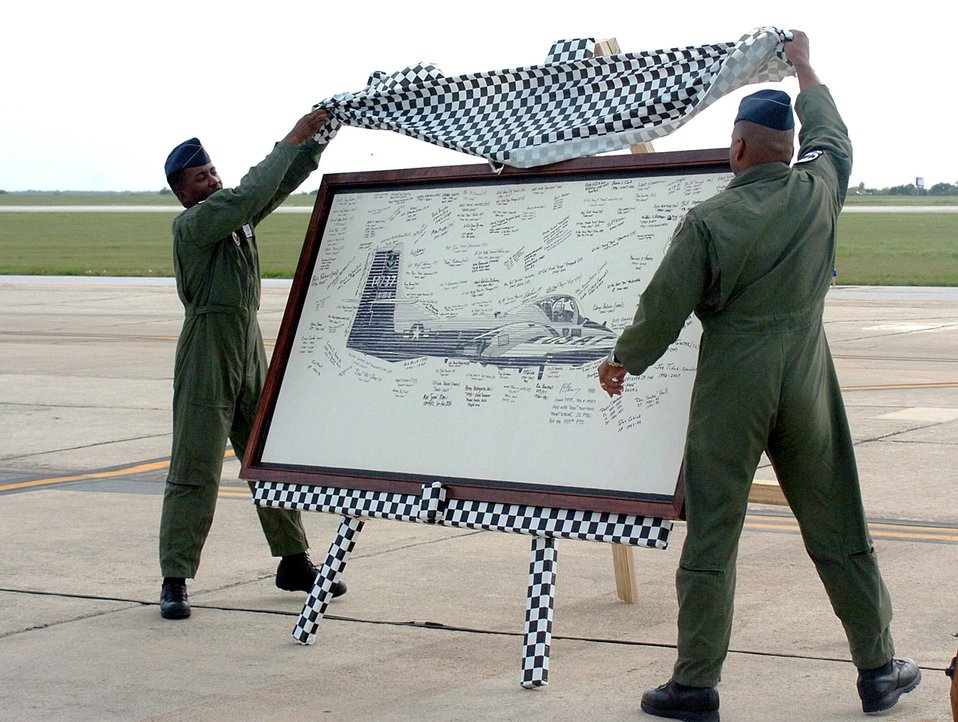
Tweet closes 42-year Randolph career

Maj. Marico Tippett (left), 559th Flying Training Squadron, and Col. Richard Clark, 12th Flying Training Wing commander, reveal the T-37 Heritage Board signed by former Tweet instructors, maintainers, life support and SARM personnel, during the T-37 Randolph retirement ceremony April 6. The board will be hung in the 559th FTS as a final tribute to the Tweet and those who supported its base mission.